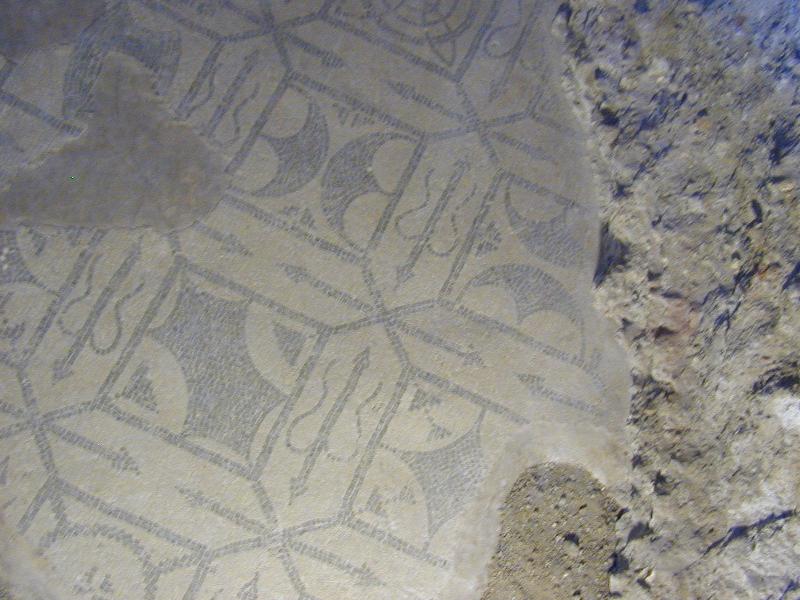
010609 09 villadestescaviromani